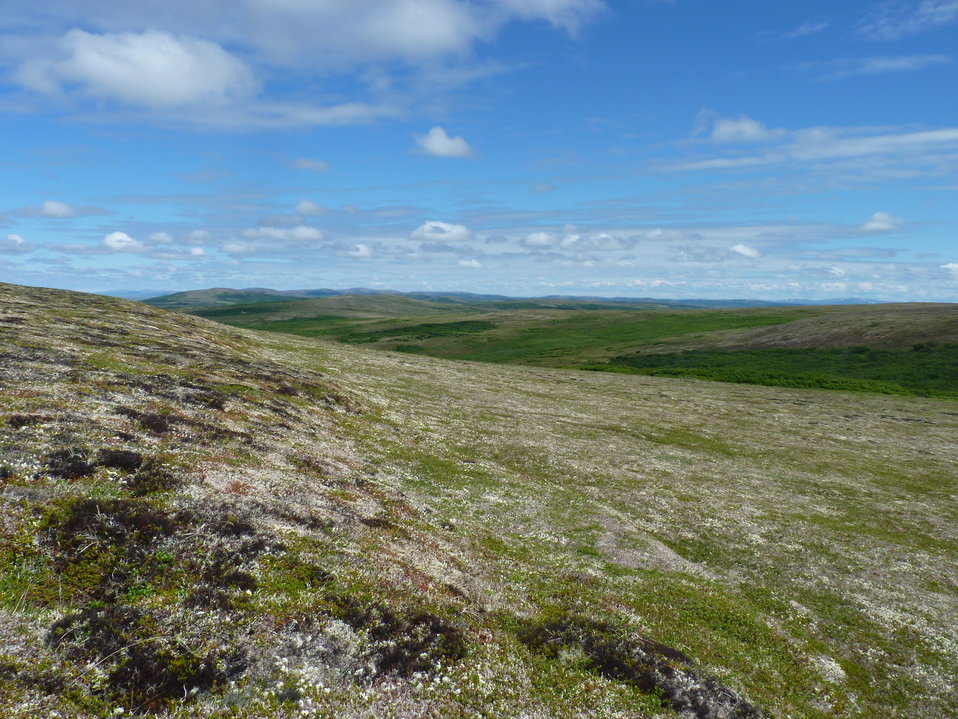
Andreafsky Wilderness, Yukon Delta National Wildlife Refuge